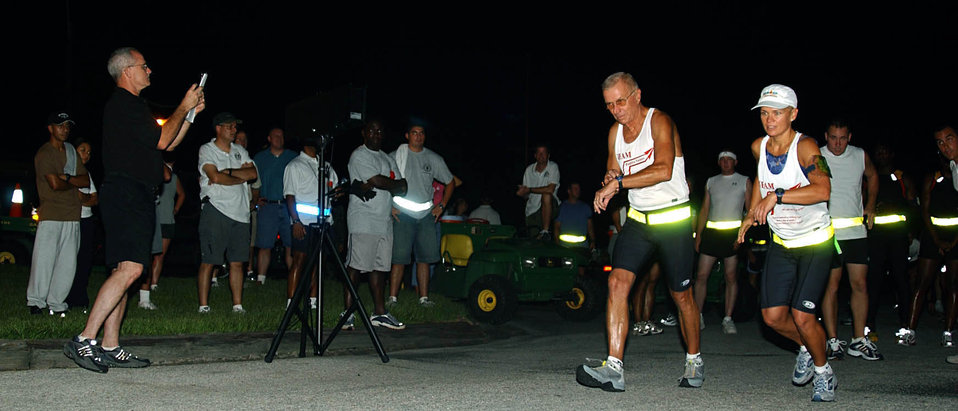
Race to the finish

MACDILL AIR FORCE BASE, Fla. -- A father-daughter combo team starts Enduro Challenge here at about 5 a.m. First Lt. Mara Fair and her father, Jack, traveled from Eglin Air Force Base, Fla., to compete in the one-of-a-kind adventure race Aug. 21.